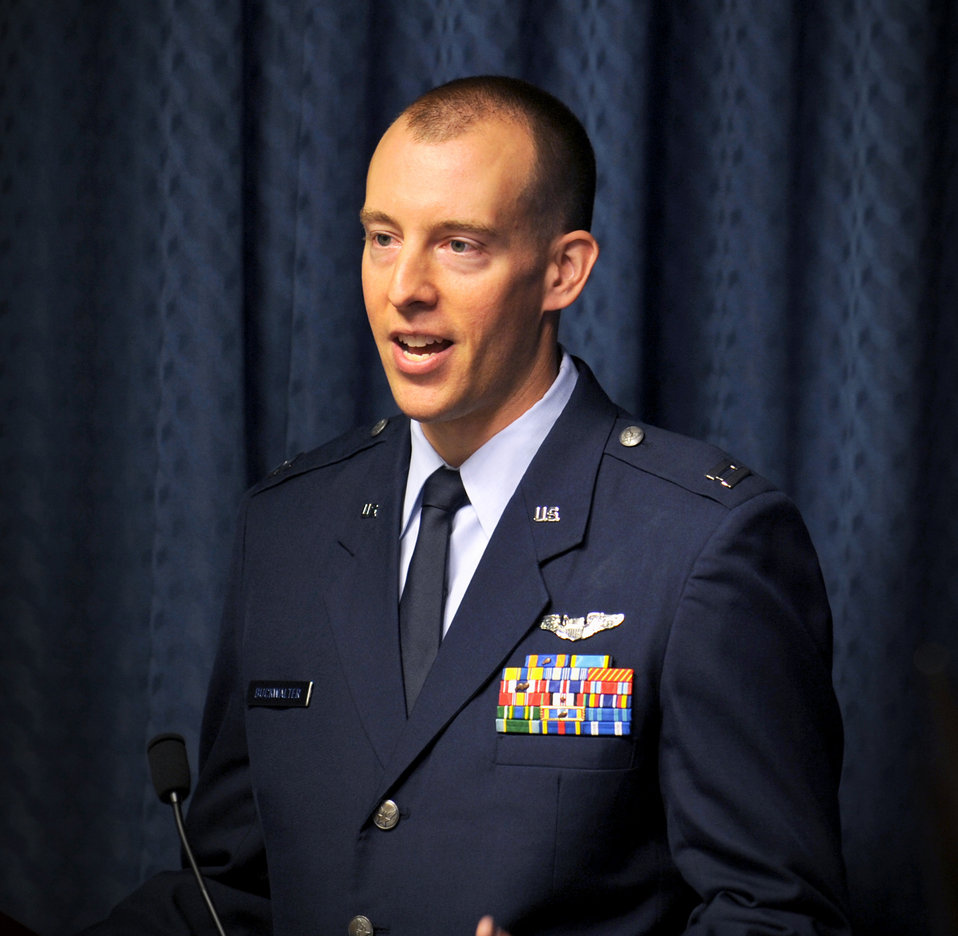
2011 Kolligian Trophy

Capt. Hans Buckwalter speaks after receiving the 2010 Koren Kolligian Jr. Trophy June 29, 2011, during a ceremony in the Pentagon. Captain Buckwalter was awarded the trophy, which recognizes outstanding achievement in airmanship and flying proficiency, for his successful landing of an F-15E Strike Eagle with a crippled left landing gear, during a flight April 8, 2010.